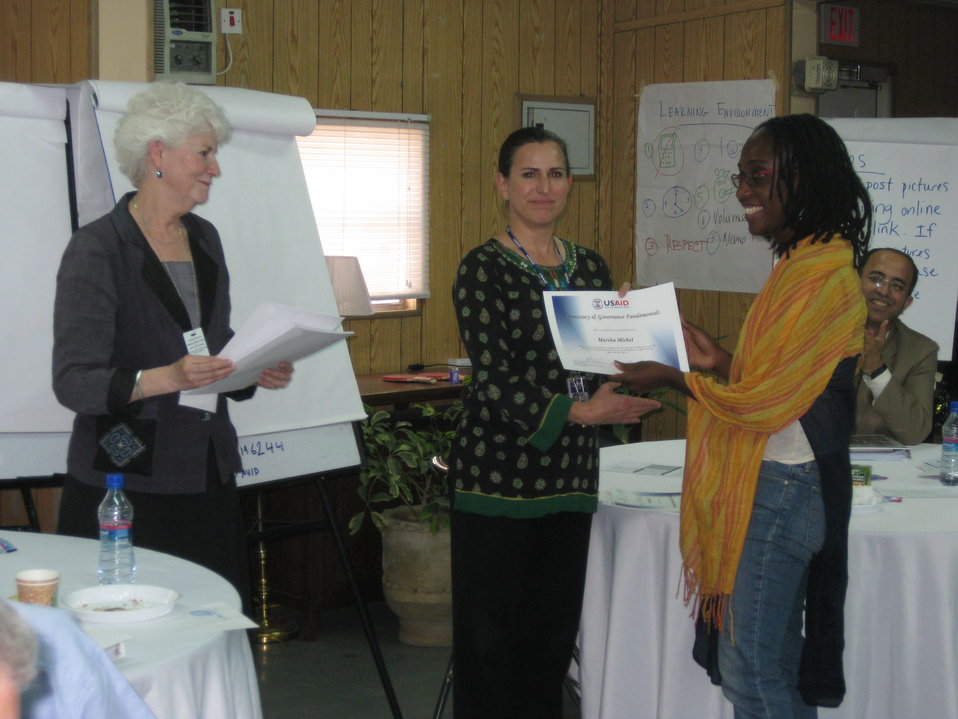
Afghan Youth Voices 063